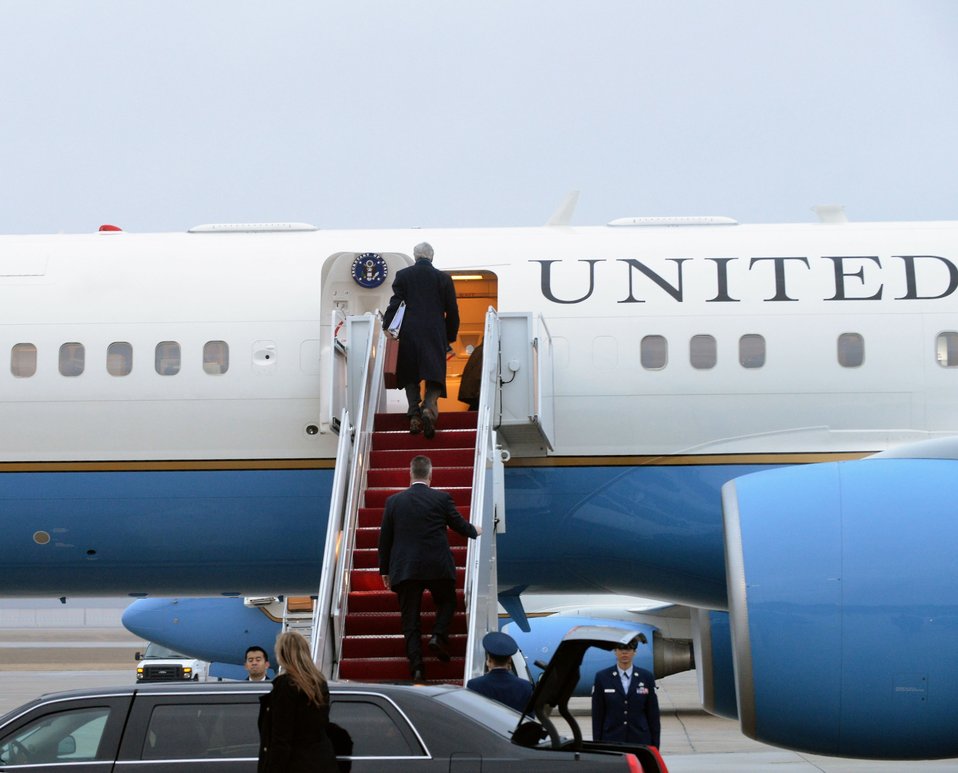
Secretary Kerry Departs for Europe and the Middle East

U.S. Secretary of State John Kerry boards a U.S. Air Force Boeing 757 at Andrews Air Force Base en route to Europe and the Middle East for his inaugural overseas trip as Secretary of State, February 24, 2013.